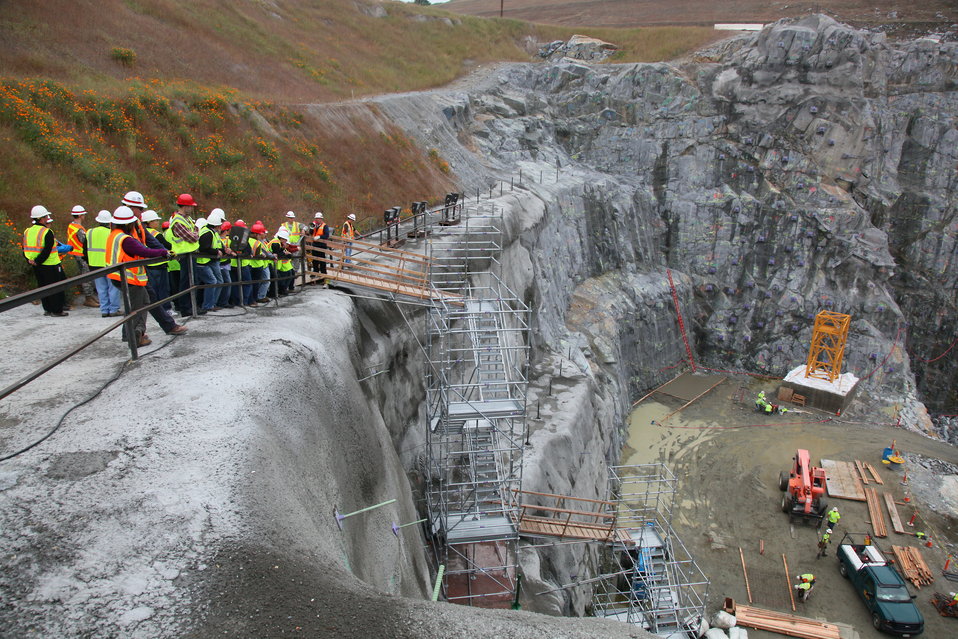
Sacramento State engineering students get a Folsom site tour

Engineering students from California State University-Sacramento took a walking tour with U.S. Army Corps of Engineers Sacramento District personnel at Folsom Lake in Folsom, Calif., April 25, 2012. Corps personnel from the Folsom Dam Joint Federal Project provided a tour of the construction site for the auxiliary spillway to the future engineers.